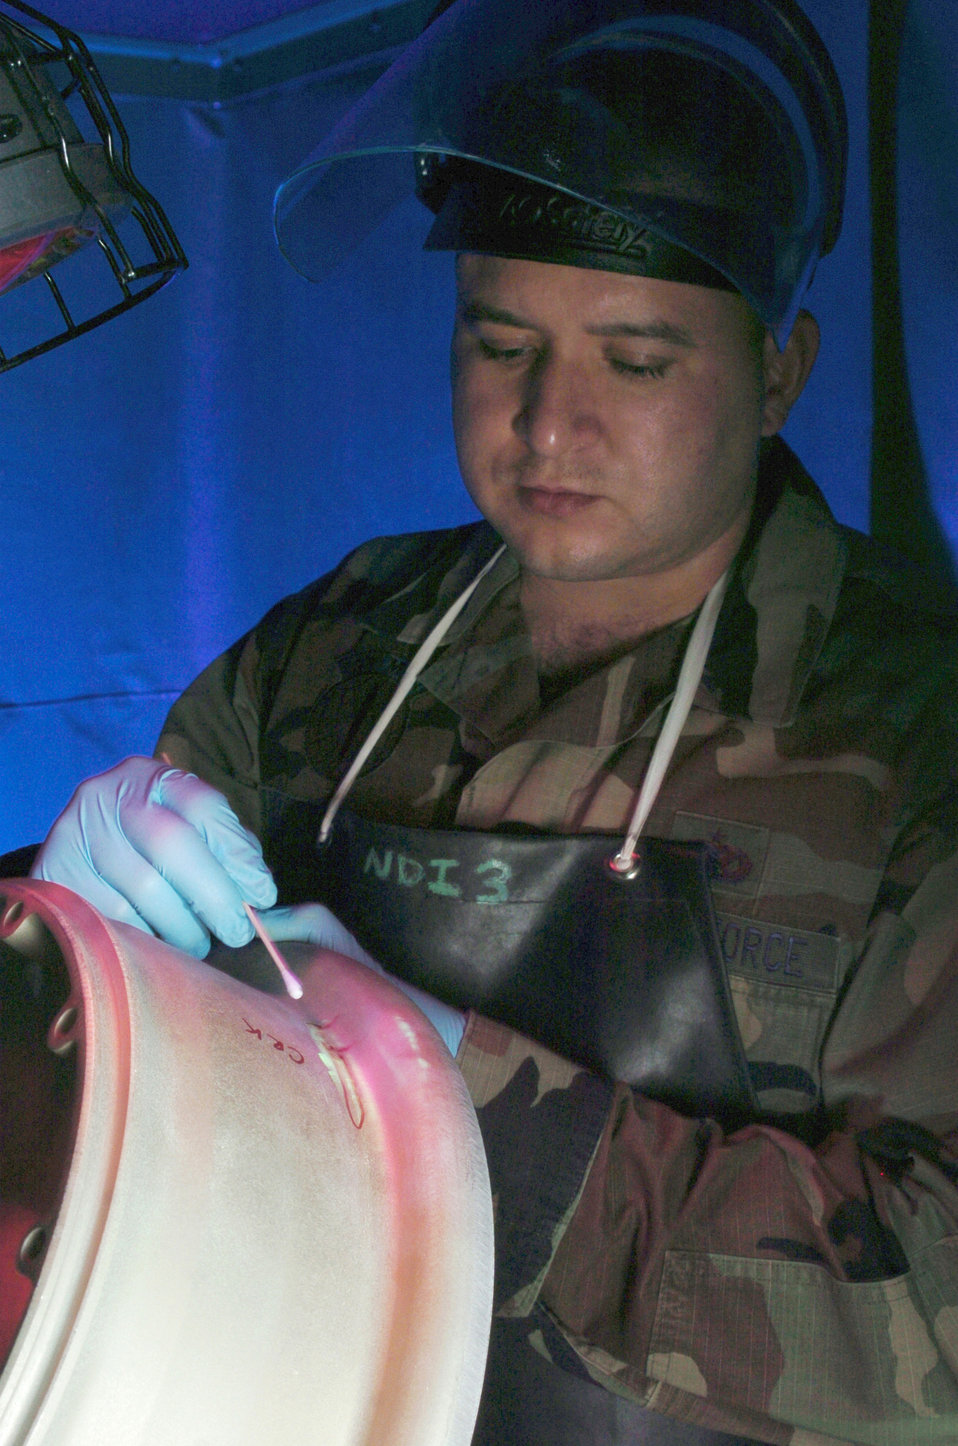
NDI technicians ensure aviation safety

YOKOTA AIR BASE, Japan -- Staff Sgt. Roland Hernandez checks a C-130 Hercules landing gear here. He is looking for cracks and hairline fractures on the component. Sergeant Hernandez is a nondestructive inspection technician assigned to the 374th Maintenance Squadron.